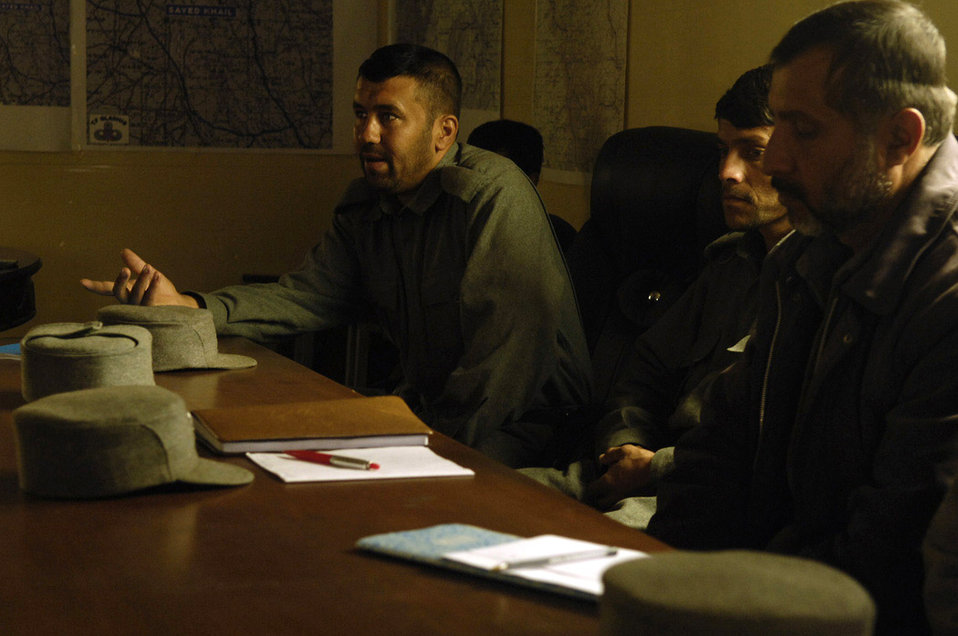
Bagram Airmen provide training to Afghan police

An Afghan National Police officer answers a question during a training class conducted by Airmen assigned to the Provincial Reconstruction Team's Bagram Police Technical Advisory Team April 22 at the Parwan Provincial ANP Headquarters in the Charikar District.